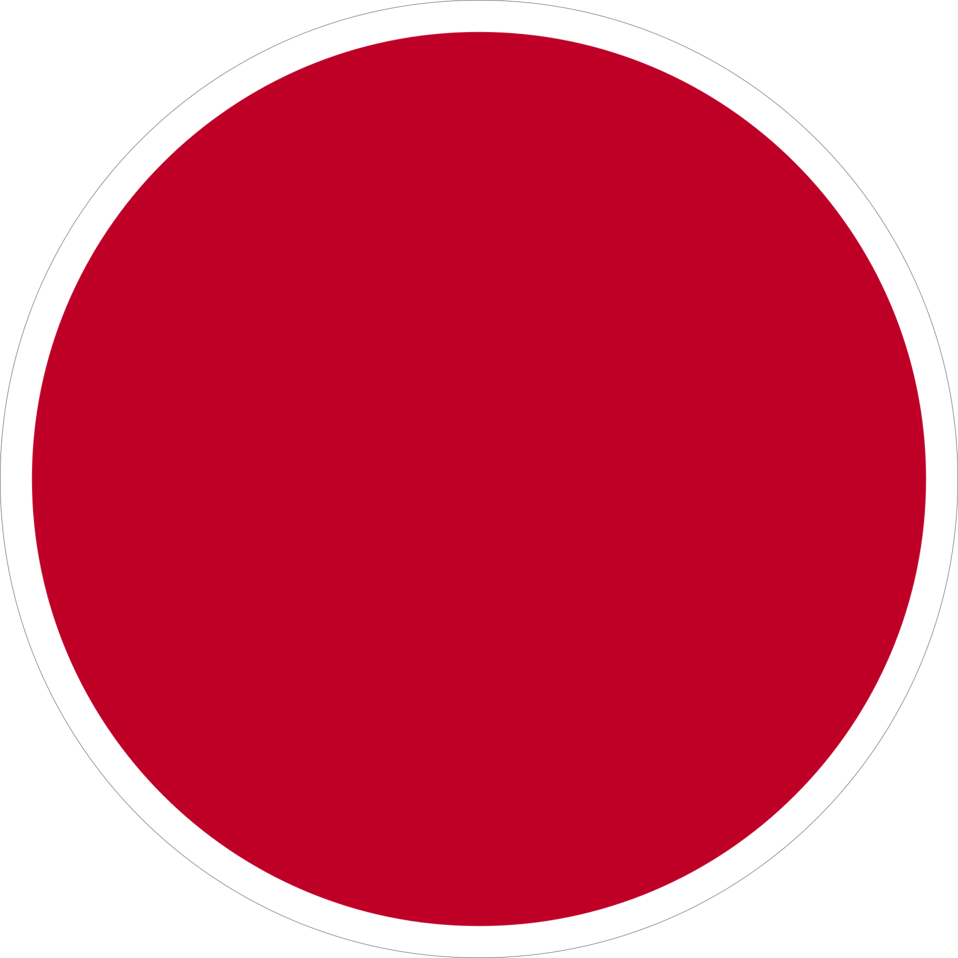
Japan Air Self-Defense Force roundel.